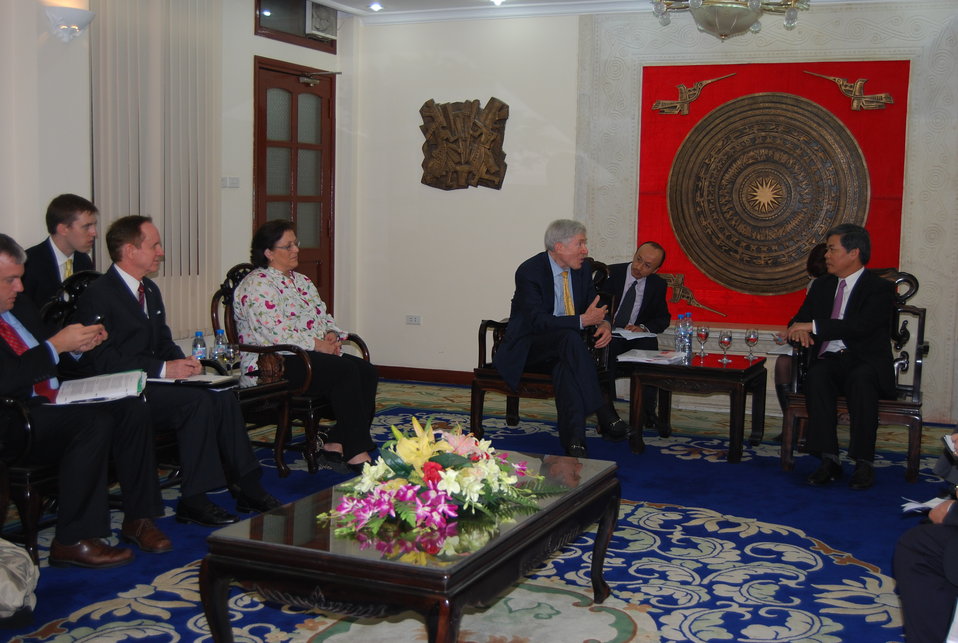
U.S.-Vietnam MOU on Low Emissions Development Strategies Signing Ceremony